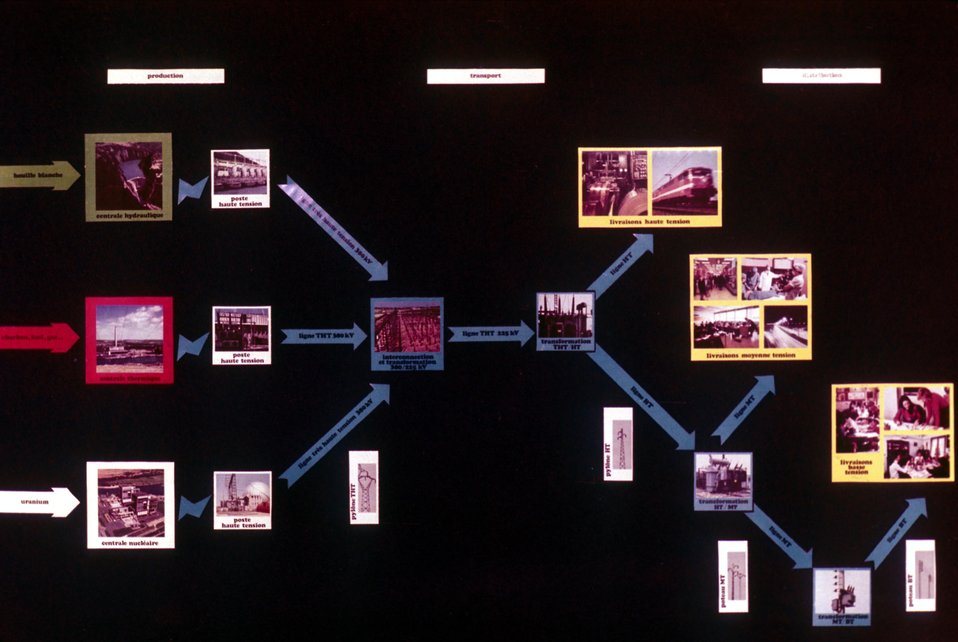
Des sources d'Ðnergie aux utilisations.